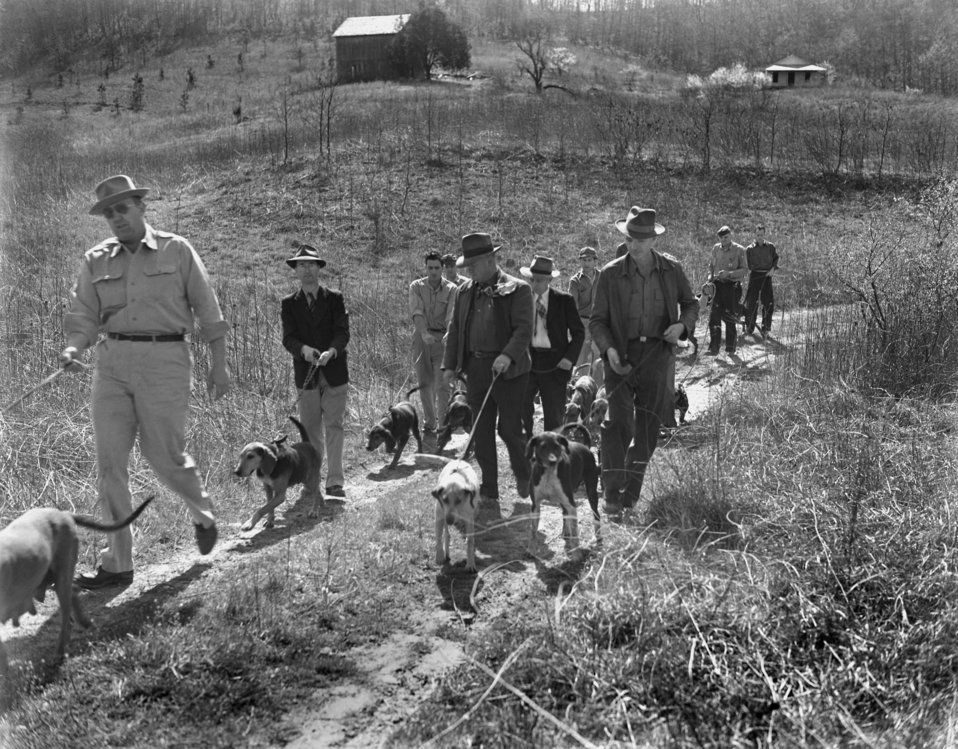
Coon Hunt (Raccoon Hunting) Oak Ridge 1947

3400-6a DOE photo Ed Westcott 4-12-1947 Oak Ridge Tennessee